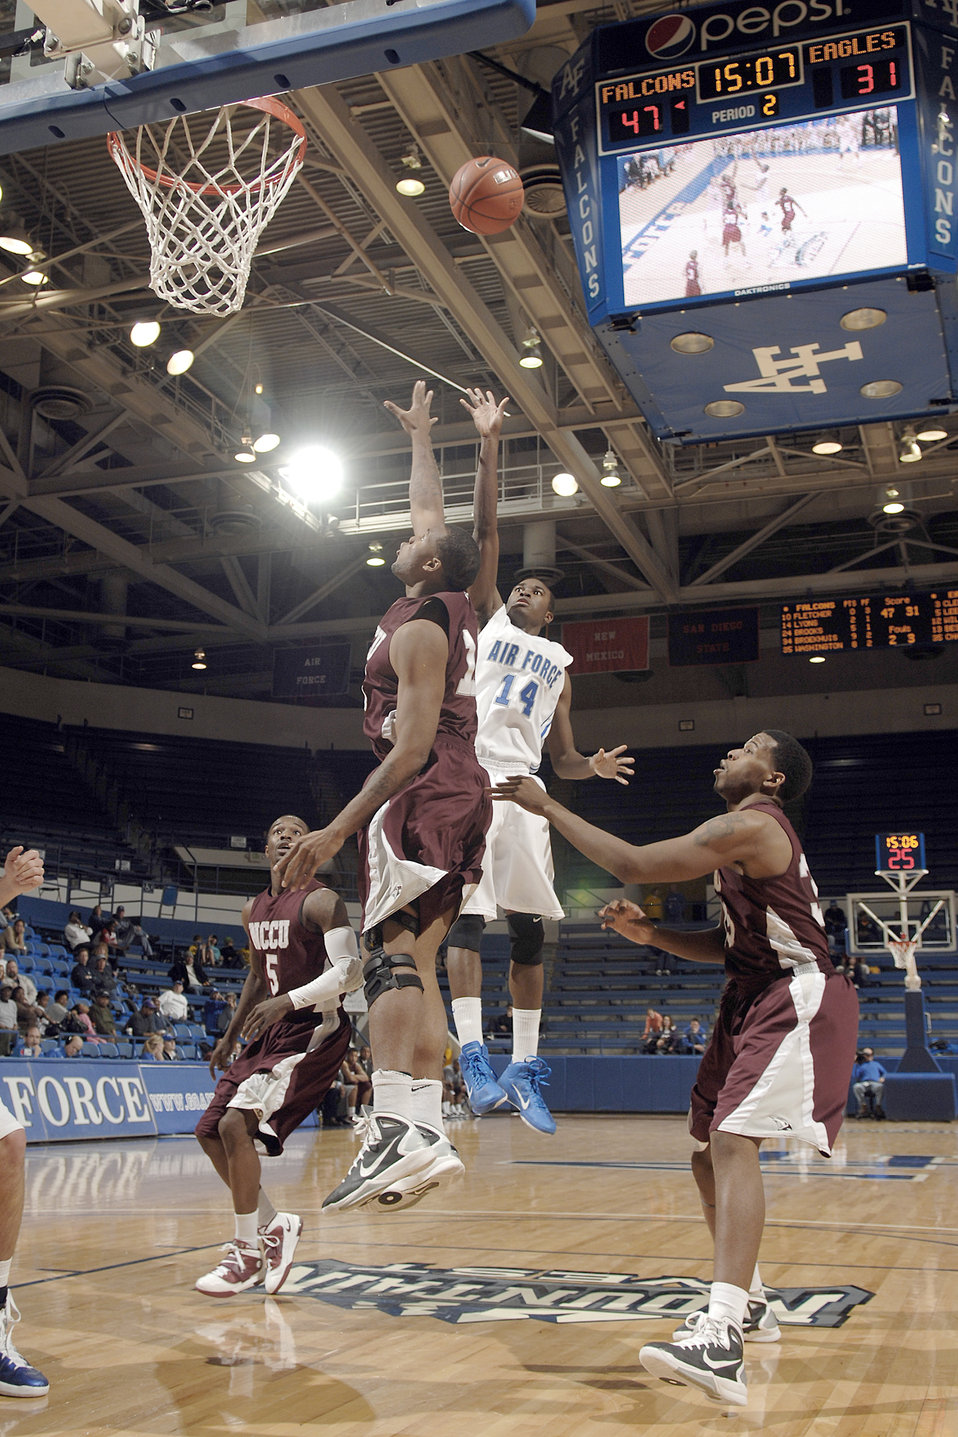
Falcons defeat the Eagles

Air Force Academy sophomore guard Michael Lyons goes up for the jumpshot as the Falcons defeat North Carolina Central 73-56, Dec 11, 2010, at Clune Arena in Colorado Springs, Colo. Lyons finished the game with 8 points and 2 rebounds.